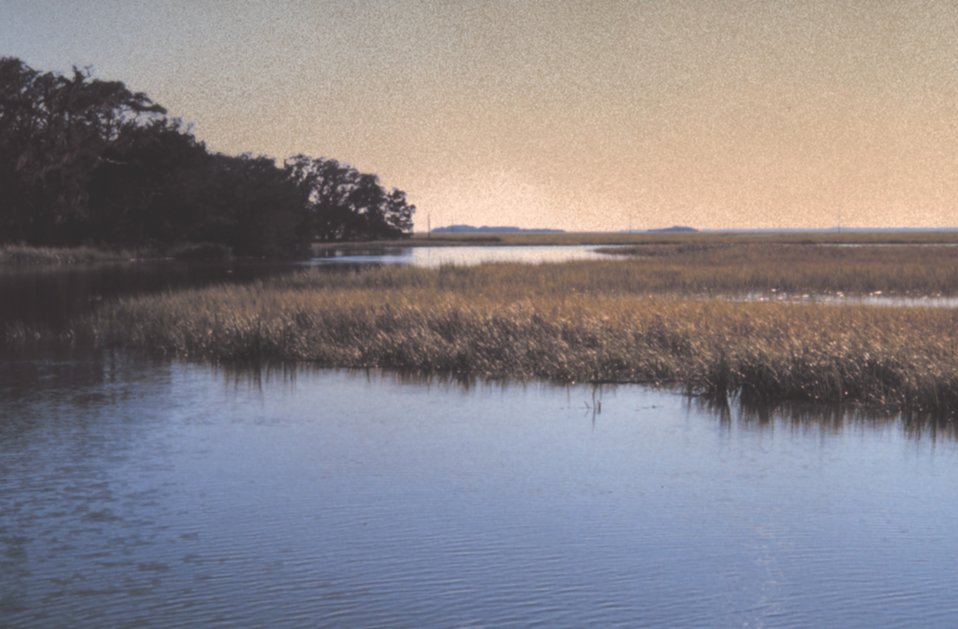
Salt marsh at high tide, at the south end of Sapelo Island. Though Georgia's coast is only about 100 miles long, about 1/3 of all salt marsh on the East Coast of the U. S. is found here.